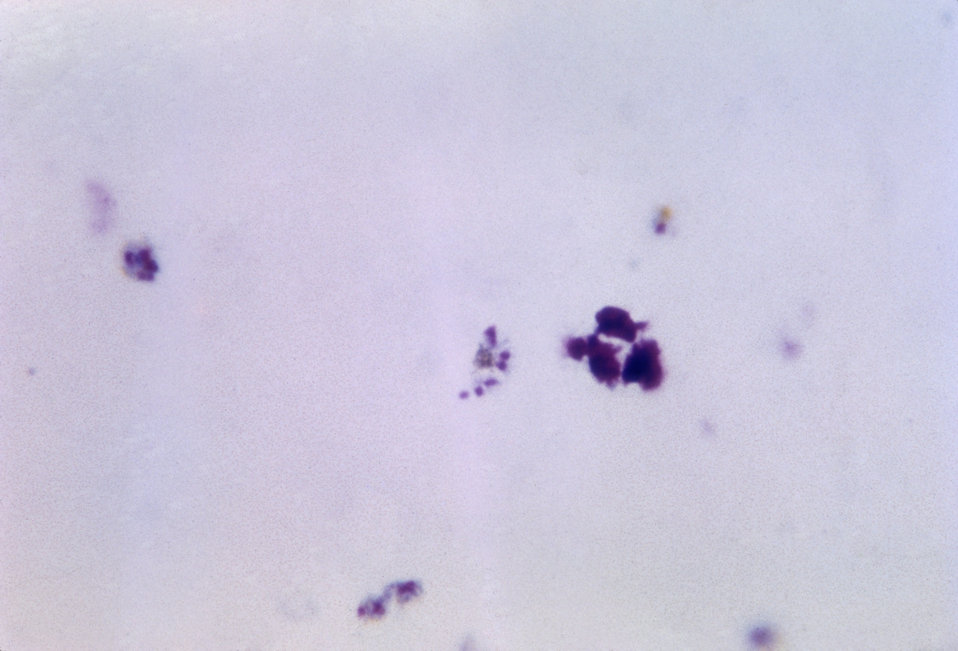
Plasmodium species, mature schizont